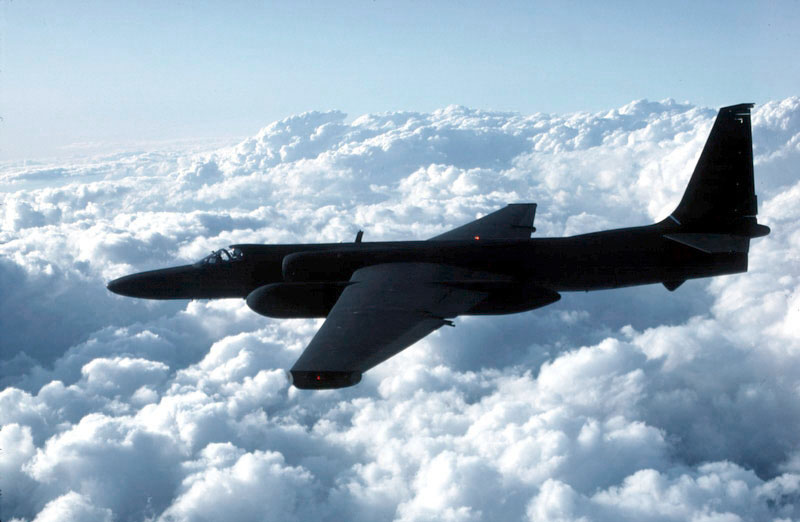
CENTAF Airpower Summary for April 3, 2007

The U-2 Dragon Lady is considered the leader among manned intelligence, surveillance and reconnaissance sytems. Aircraft, such as this one, fly daily missions in support of the war on terrorism.